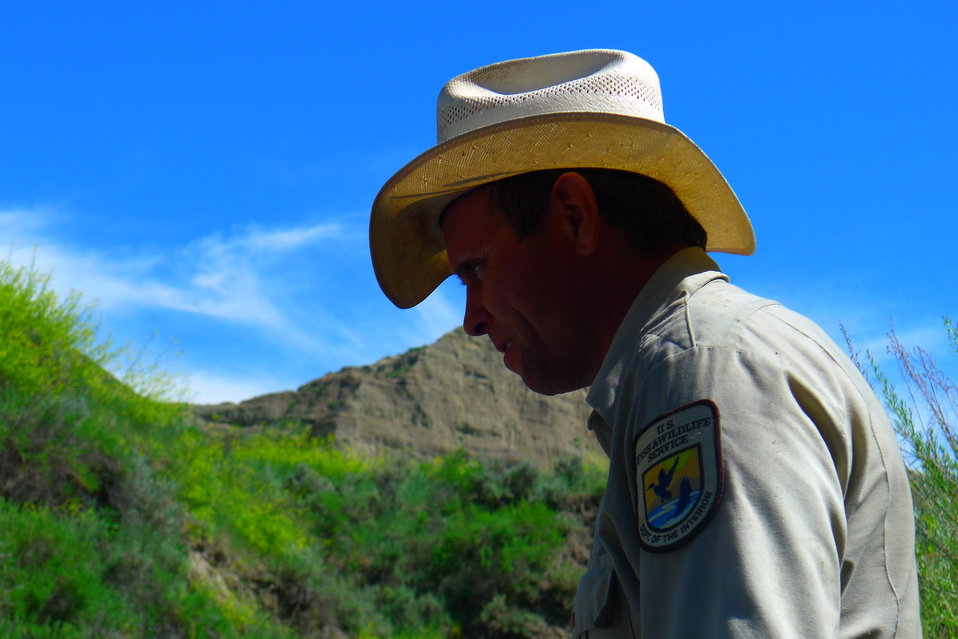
Bracing for the Work Ahead

USFWS Range Technician, Dan Harrell, contemplates the scene and work ahead of his crew.